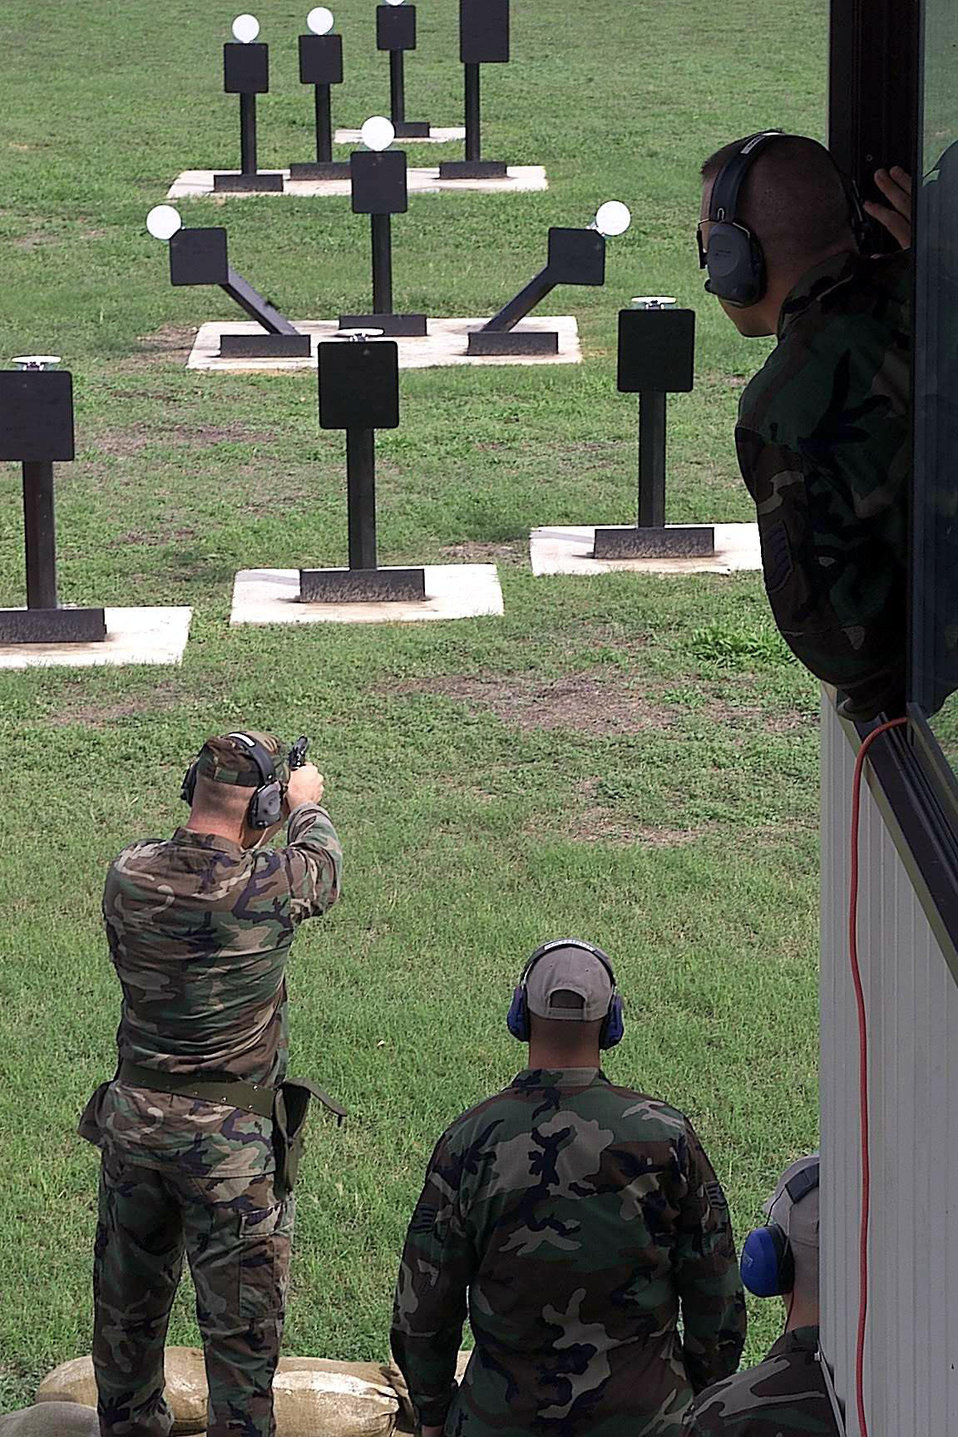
Pistol range

LACKLAND AIR FORCE BASE, Texas -- Tech. Sgt. Frank Lubas, 2nd Security Forces Squadron, Barksdale Air Force Base, La., observes the skill of an Air Force Special Operations Command competitor from his perch in the range safety tower during the pistol phase of Defender Challenge 2000 here. Defender Challenge is the annual Air Force-wide competition showcasing the talents and capabilities of 13 international security forces teams in seven physical fitness, base defense and policing skills. The competition ends Nov. 4.